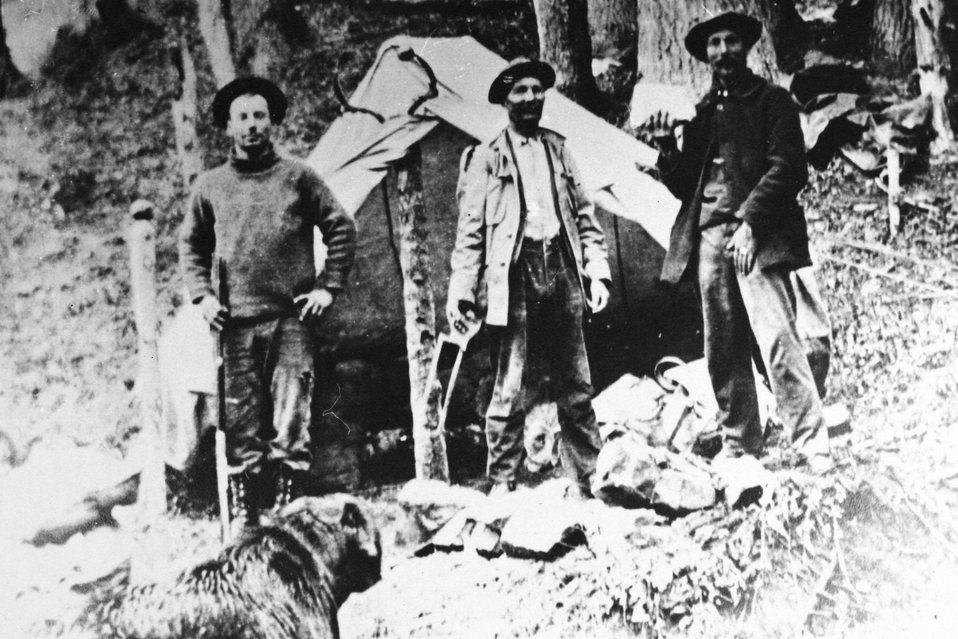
Hunting camp.